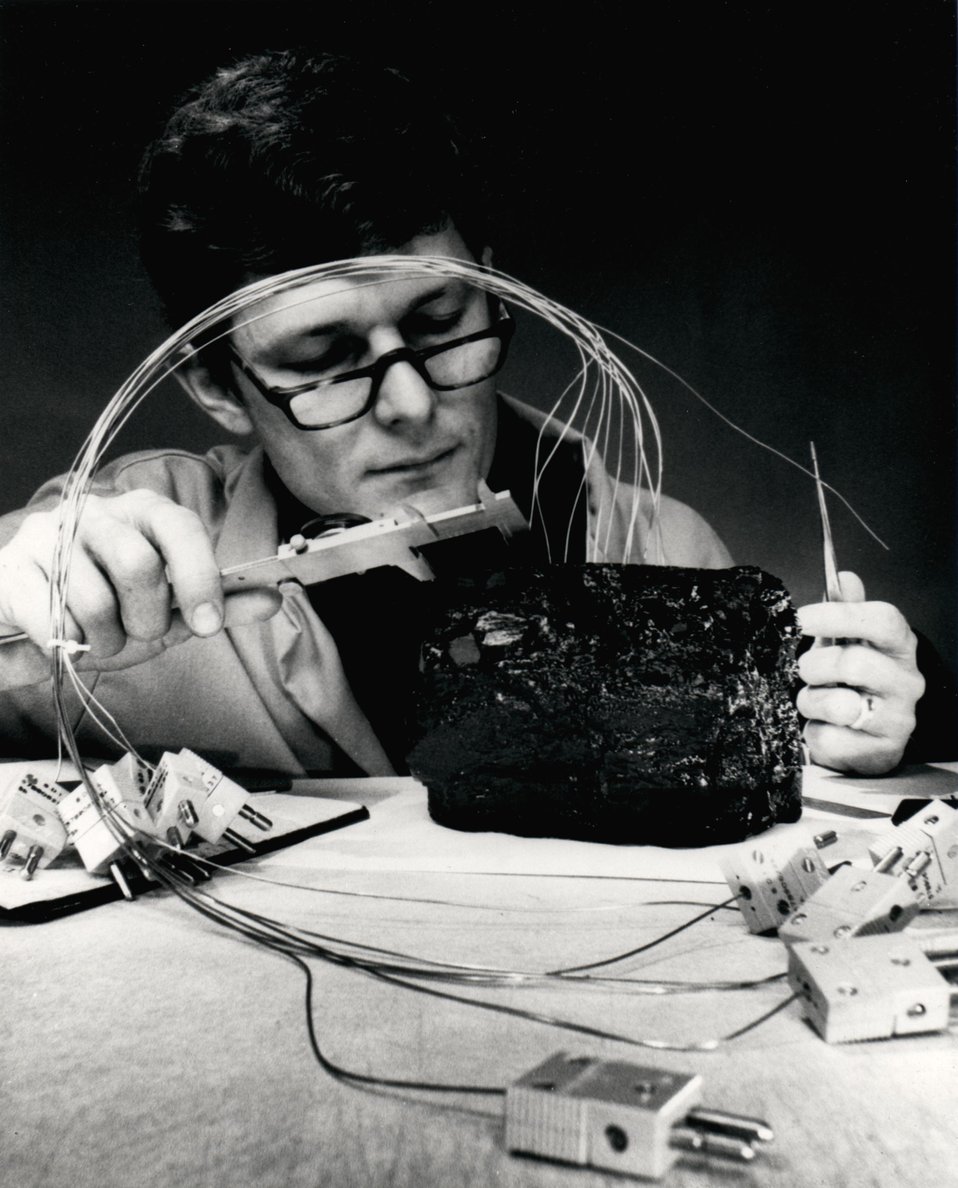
Researchers at ERDA's Oak Ridge National Laboratory are conducting a study of the pyrolysis (destructive heating) of coal. Circa 1975.